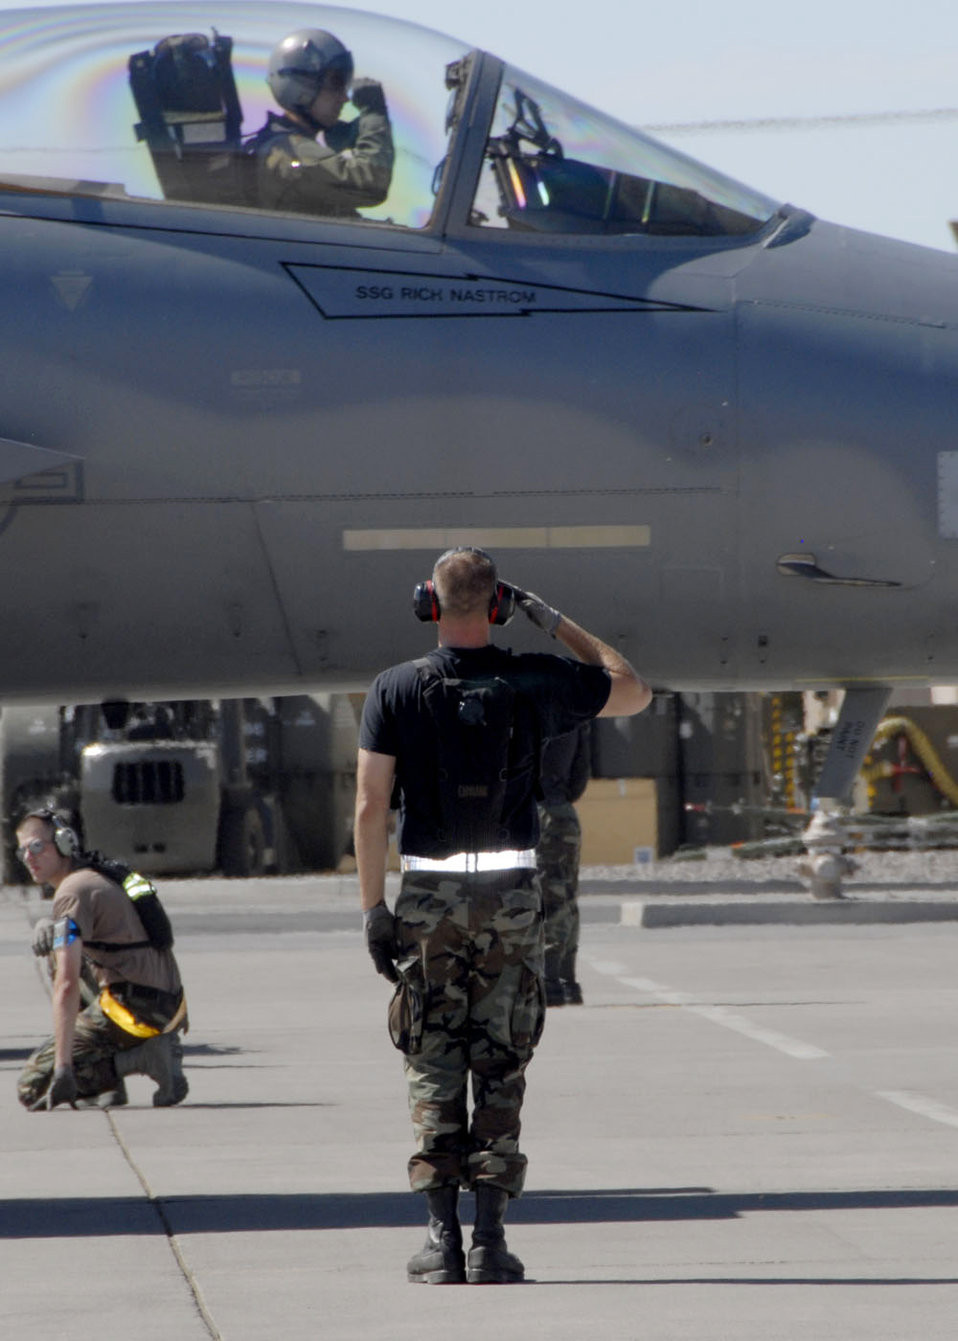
104th Fighter Wing comes to Red Flag

The crew chief salutes as an F-15 Eagle pilot taxis past on the flightline of Nellis Air Force Base, Nev., Aug. 25 on the way to a Red Flat training mission. Red Flag offers pilots and ground crews training in actual wartime scenarios to increase their combat skills. The aircraft and crew chief are with the Massachusetts Air National Guard's 104th Fighter Wing at Barnes Air National Guard Base in Westfield, Mass.